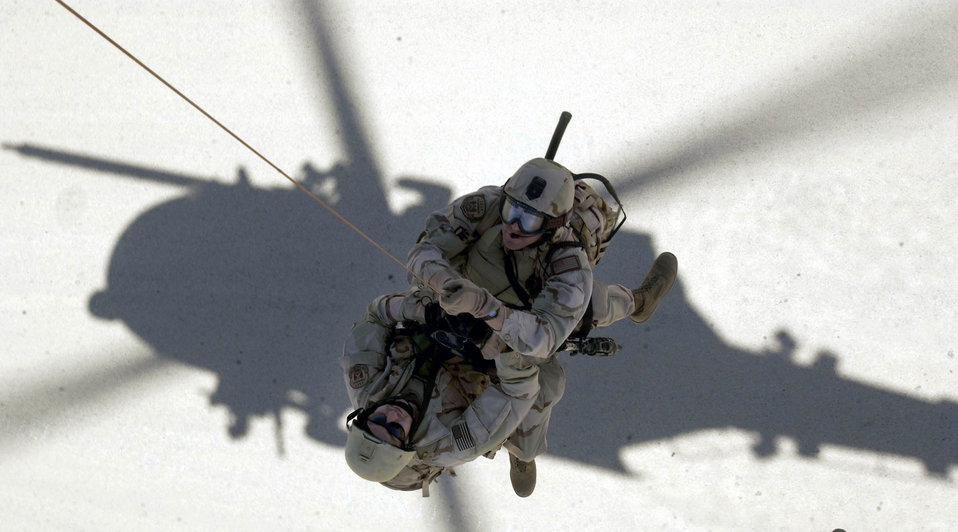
Up, up and away

OPERATION IRAQI FREEDOM -- Pararescuemen from the 304th Rescue Squadron are hoisted up to an HH-60G Pave Hawk at Tallil Air Base, Iraq during Operation Iraqi Freedom.